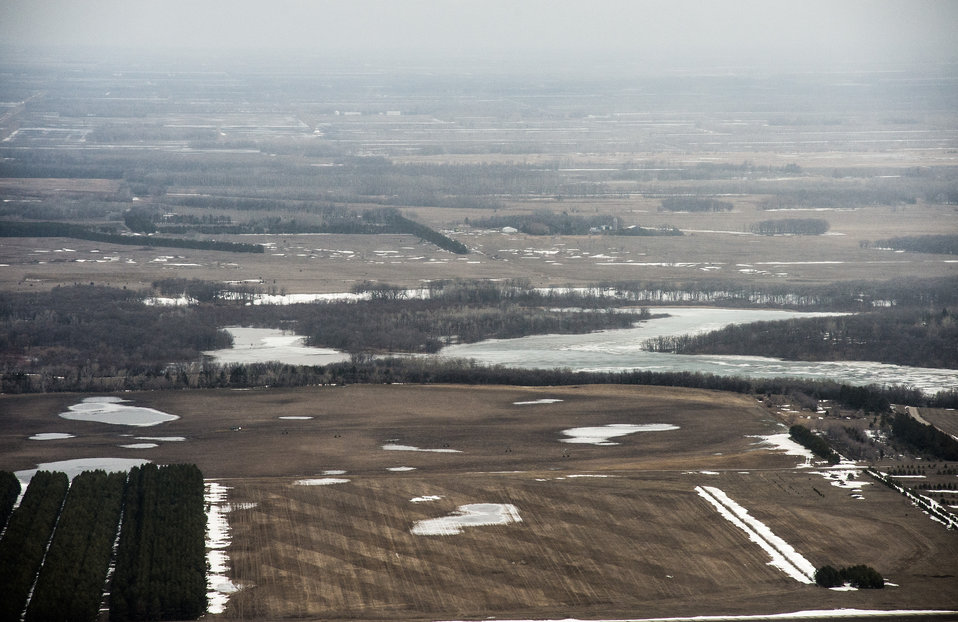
Flood pools for Renwick and Morris Dam, in Pembina County, ND, part of the Red River basin, on Wednesday, May 1, 2013. For information about this and other programs from the USDA Red River Basin Initiative (RRBI) please see www.mn.nrcs.usda.gov/news/features13/RRBI.html.